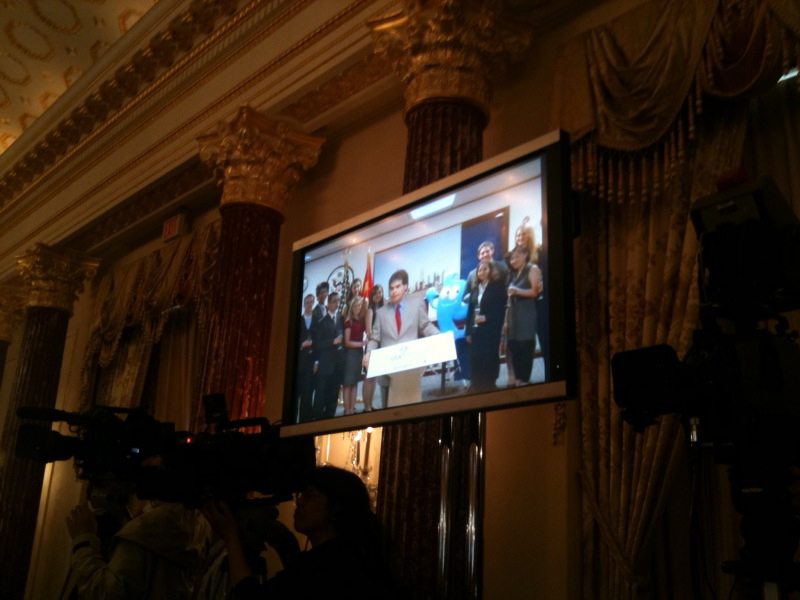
Secretary Clinton Celebrates Opening of Shanghai Expo U.S.A. Pavilion

U.S. Embassy staff in China join U.S. Secretary of State Hillary Rodham Clinton as she celebrates the opening of the U.S.A. Pavilion at the 2010 Shanghai Expo via a digital video conference at a reception hosted by the Office for Global Partnership Initiatives at the Department of State in Washington, DC April 30, 2010.